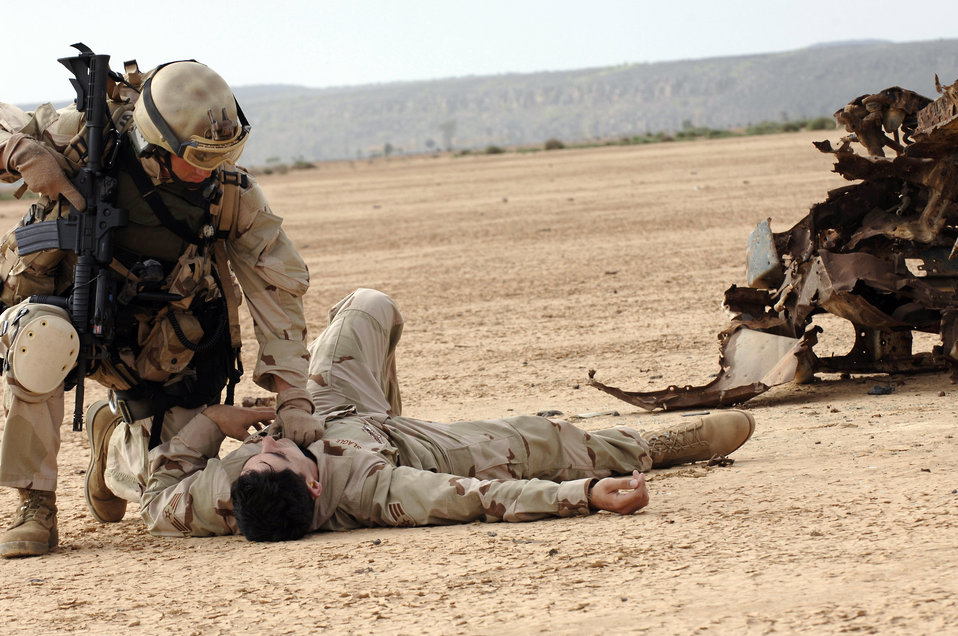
Search and rescue

CAMP LEMONIER, DJIBOUTI, Africa (AFPN) -- Senior Airman Matthew Slagle lies on the ground simulating a car crash injury, as an Air Force pararescueman prepares him for transport on a Marine CH-53 Super Stallion helicopter. The scenario was part of a search and rescue exercise, or SAREX, here Feb 8.